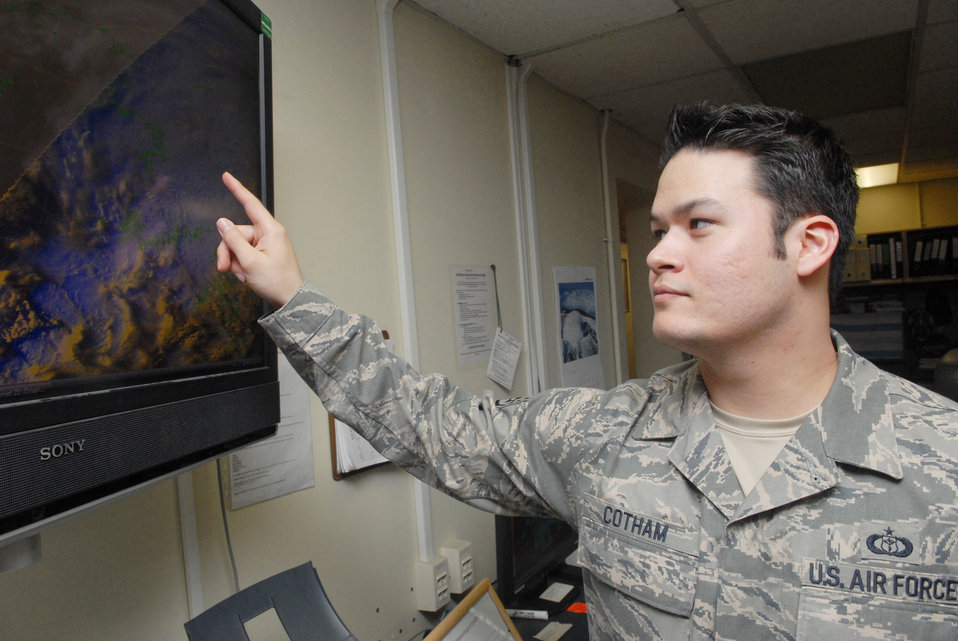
Weather

Staff Sgt. Jack Cotham observes data from a weather surveillance radar doppler screen Feb. 11, 2010 at Kunsan Air Base, South Korea . Weather Surveillance Radar, 1988, Doppler is commonly called Doppler radar and detects precipitation and atmospheric movement or wind. Sergeant Cotham is a 8th Operation Support Squadron weather forecaster.